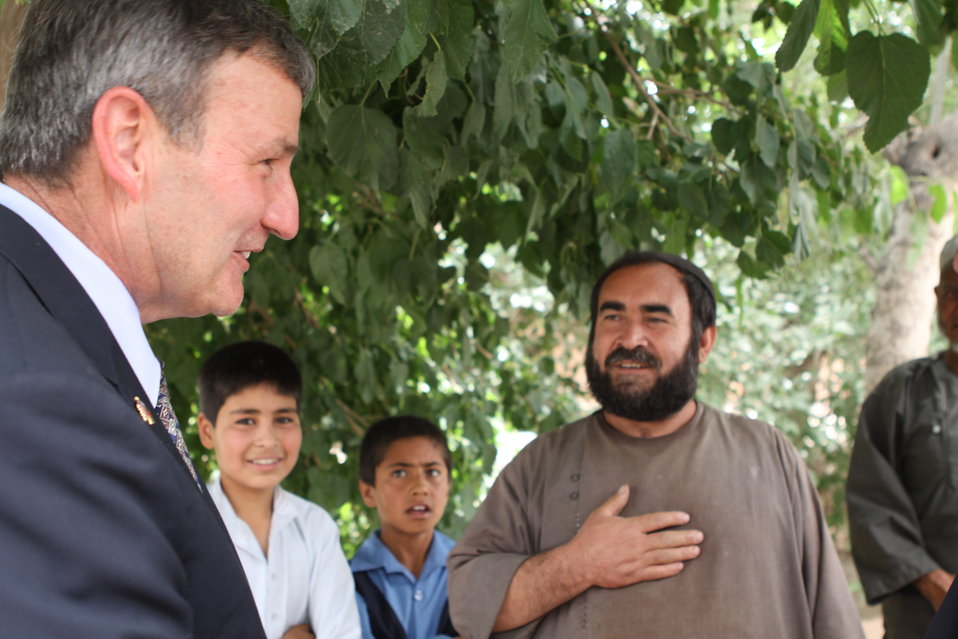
100525 Hirat Marble Conference 655